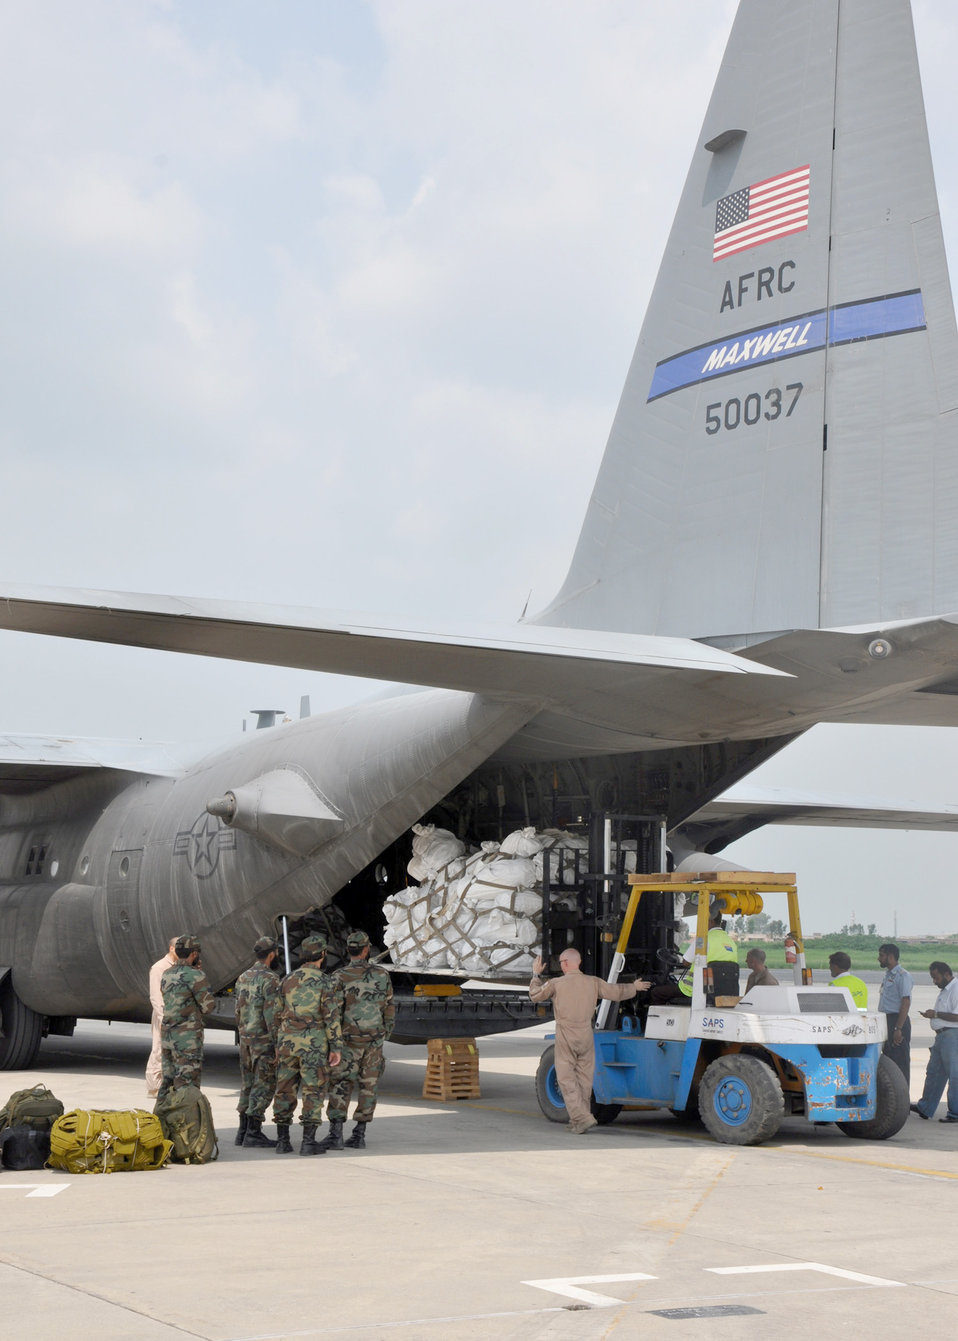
Pakistan flood relief

A loadmaster guides a forklift carrying international aid destined for Pakistani flood victims onto a C-130 Hercules cargo aircraft at Pakistan Air Force Base Chaklala, Pakistan. To date, U.S. military cargo aircraft based in Afghanistan have transported more than 194,000 pounds of relief supplies from the Pakistan air force's central flood relief cell to required locations throughout Pakistan in support of government of Pakistan officials' requests for additional airlift support. In addition, U.S. military helicopter crewmembers conducting relief operations in partnership with the Pakistan military have rescued more than 4,800 people and transported more than 600,000 pounds of relief supplies.